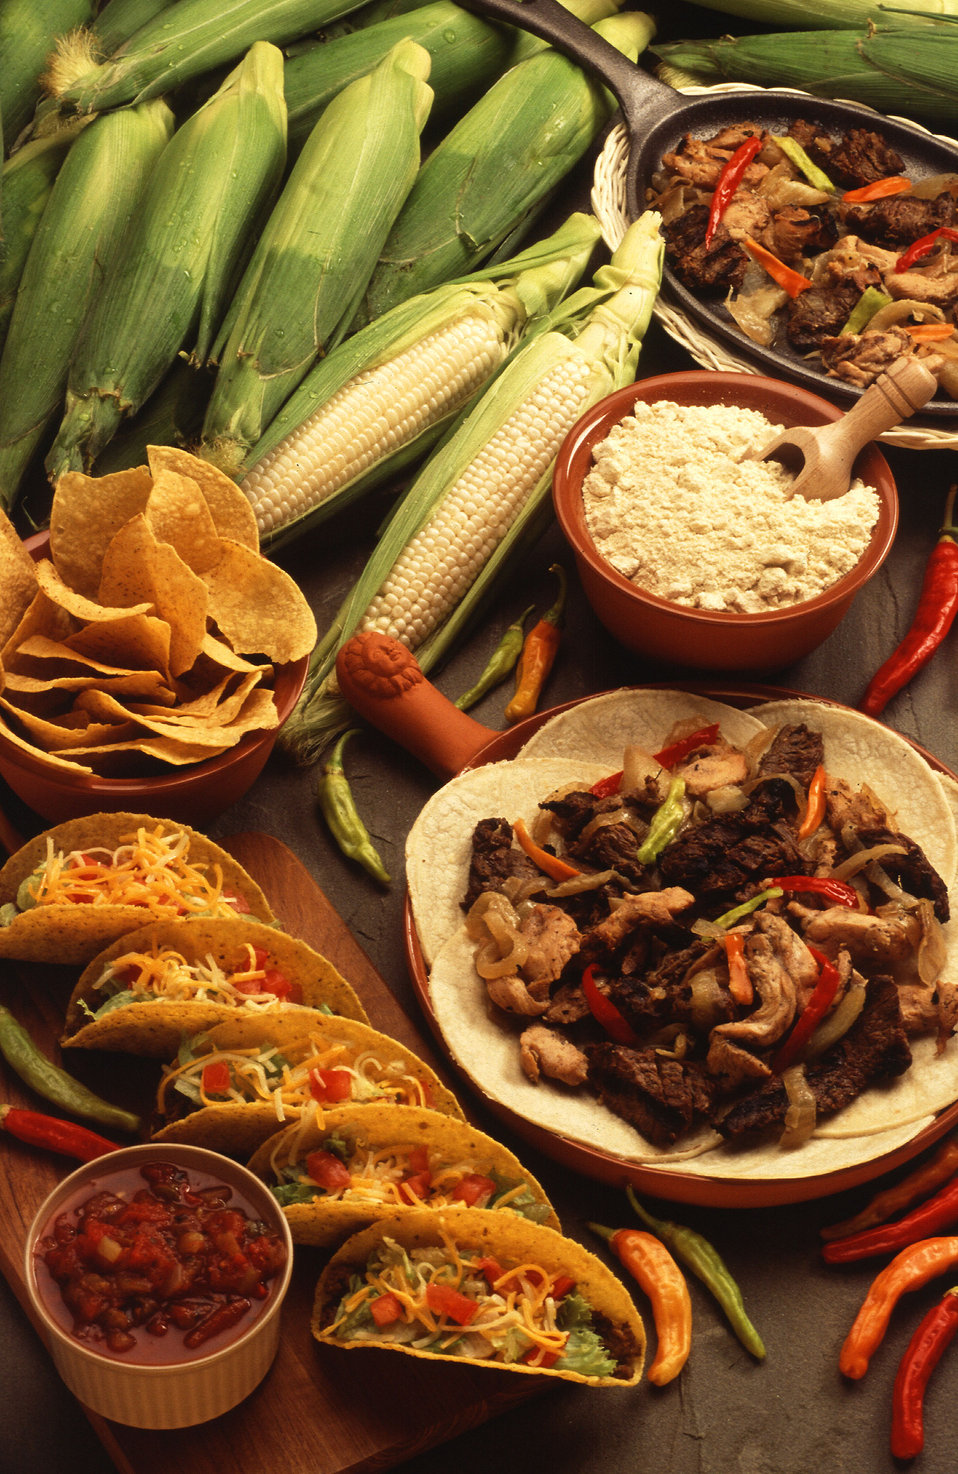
The hearty flavor of corn flour products like tortillas and taco shells is largely the work of a natural compound identified by U.S. Department of Agriculture (USDA) Agriculture Research Service (ARS) scientists. They have pinpointed 2-amino-acetophenone as key to flavor and aroma of yellow corn tortilla flour. Twenty taste panelists were enlisted to nose out the correct compound from a field of 30. The information can help food makers check the quality of their products. USDA ARS has bred a new hot pepper that's 20 times hotter than the typical cayenne, and it's ideal for growing in the home garden One plant will produce at least 134 pepper pods, and it grows just about anywhere in the U.S.